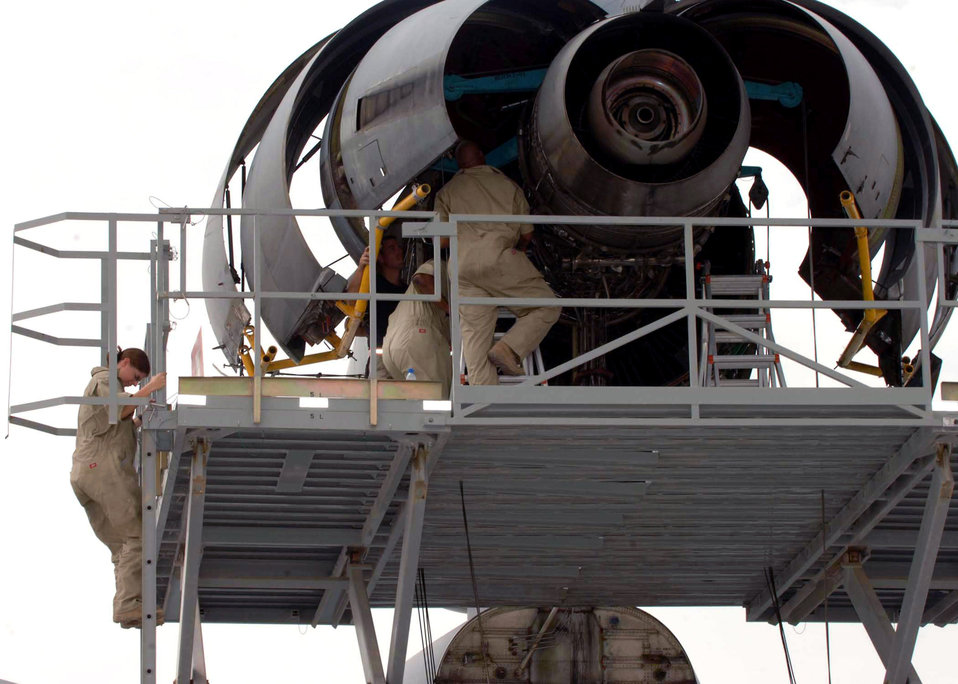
CENTAF Airpower Summary for April 18, 2007

Staff Sgt. Stephanie Zamudio ascends a KC-10 Extender portable tailstand April 5 to help Tech. Sgt. Aaron Hayes, Staff Sgt Ryan Cramer and Kelvin Hall remove the number two engine. The team of 380th Expeditionary Aircraft Maintenance Squadron mechanics recently replaced the engine, a major undertaking, especially in a deployed location.